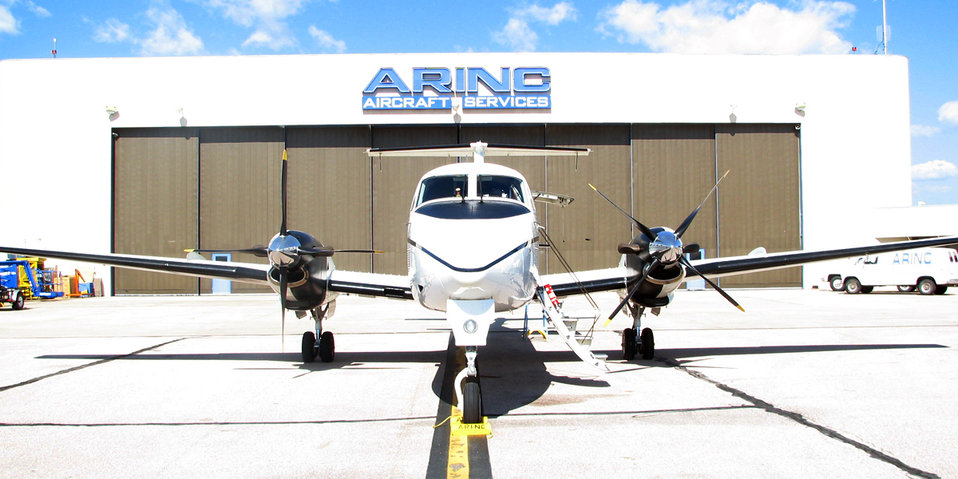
C-12s leaving Osan

C-12 Hurons left Osan Air Base, Korea, for Yokota AB, Japan on July 1 with the inactivation of the 55th Airlift Flight. The C-12s provided airlift capabilities for Osan AB for 15 years, moving numerous people and pieces of equipment during those years.